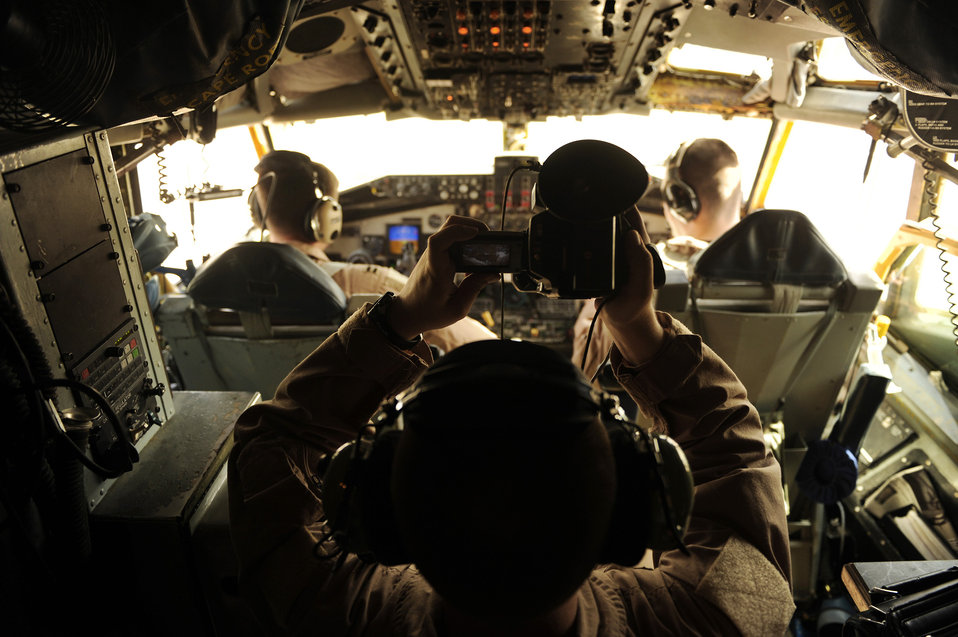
Refueling operations over Iraq

Staff Sgt. Anthony Stone documents the flight preparations of a KC-135 Stratotanker crew with the 340th Expeditionary Air Refueling Squadron in Southwest Asia. Sergeant Stone is a broadcaster assigned to the Air Forces Central Combat Camera Team.